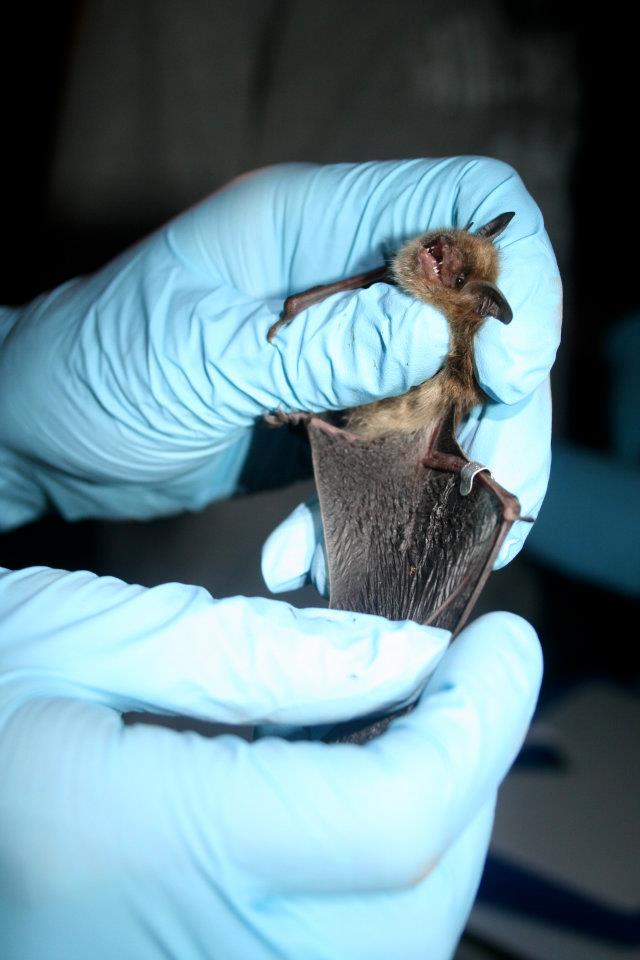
Wing band on little brown bat